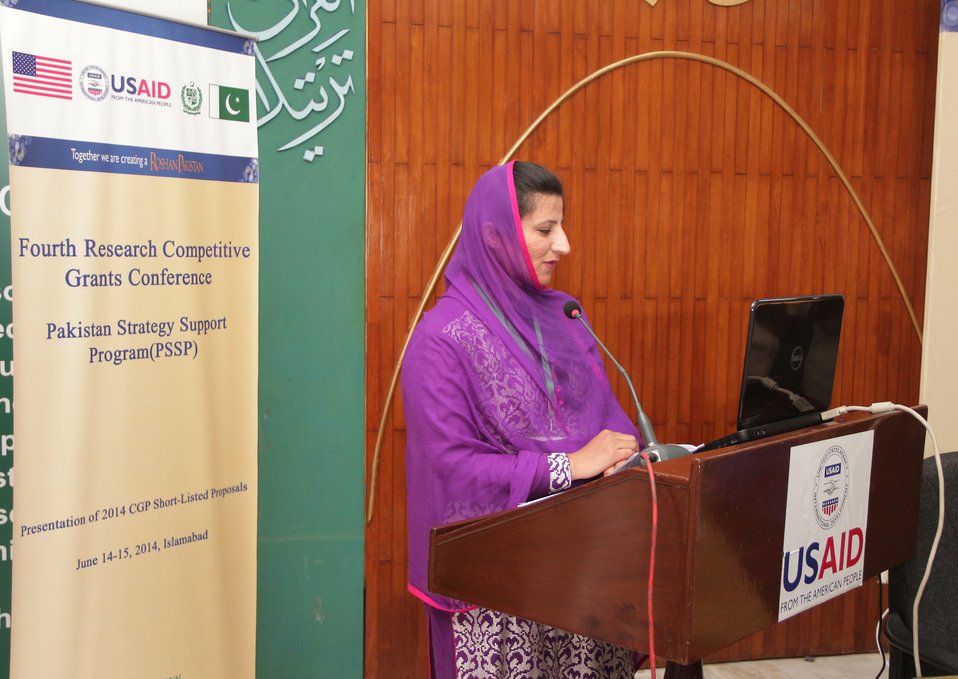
PSSP - CGP-IV Research Conference, June 14, 2014

Dr. Samina Sabir, University of Azad Jammu and Kashmir, Muzaffarabad presenting her Research Proposal on 'Infrastructure Development and Economic Growth in Pakistan' at the Fourth Research Competitive Grants Conference organized by PSSP